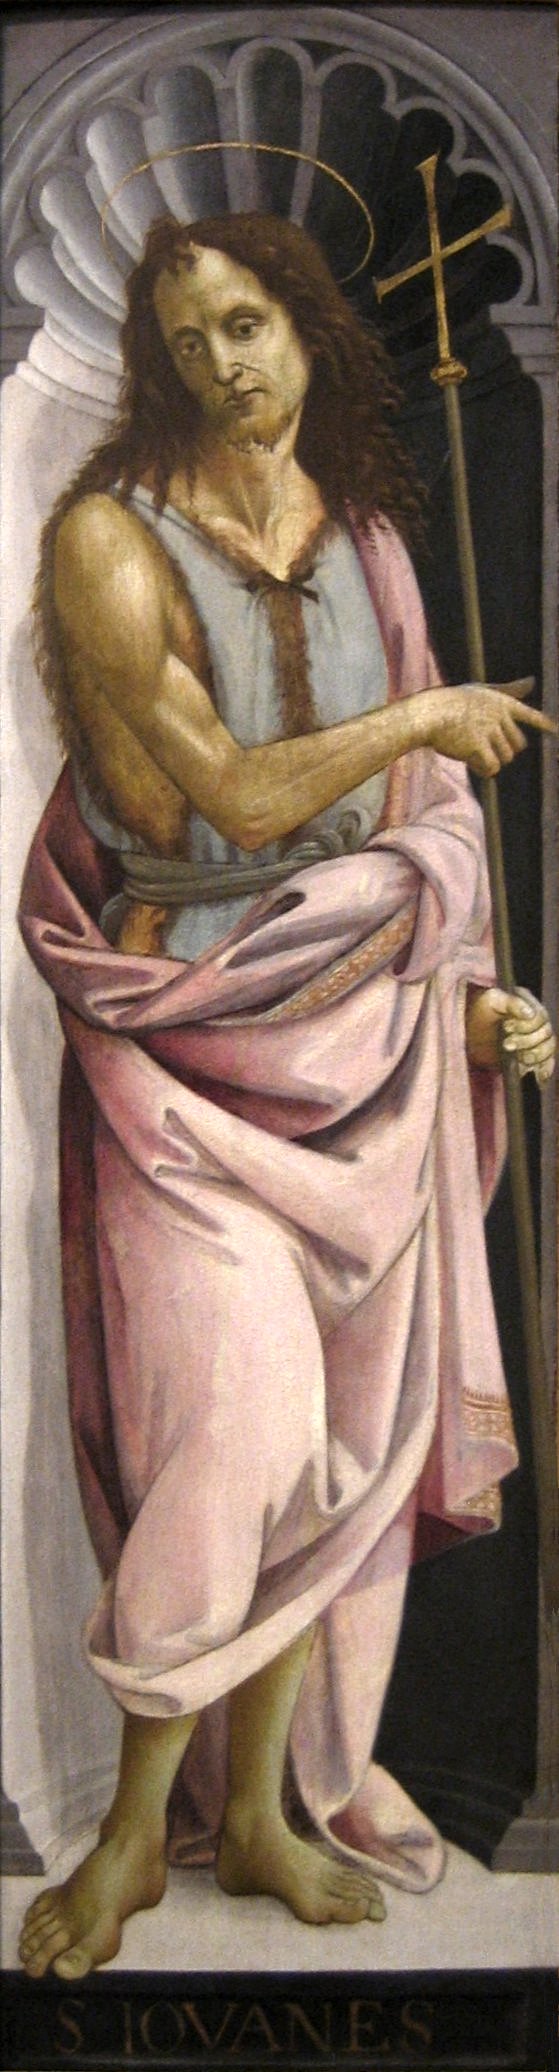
'Saint John the Baptist', tempera on panel painting by Bartolomeo di Giovanni, 1490s, Art Gallery of New South Wales